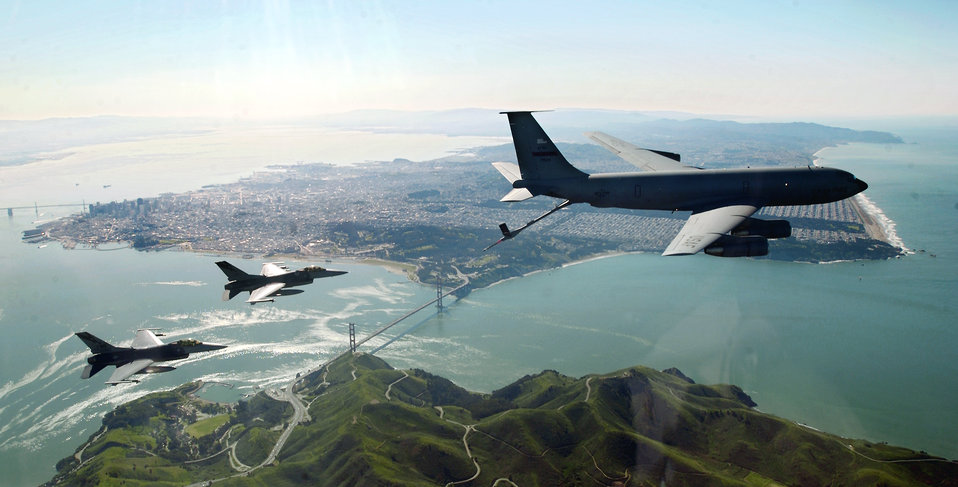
Operation Noble Eagle

OVER SAN FRANCISCO -- A KC-135 Stratotanker from Beale Air Force Base, Calif., prepares to gas up two F-16 Fighting Falcons above San Francisco's Golden Gate Bridge. The Air Force Reserve Command tanker and fighter fleets fly regular training patrols as vital components to Operation Noble Eagle, along with Air National Guard and active-duty aircraft and people.